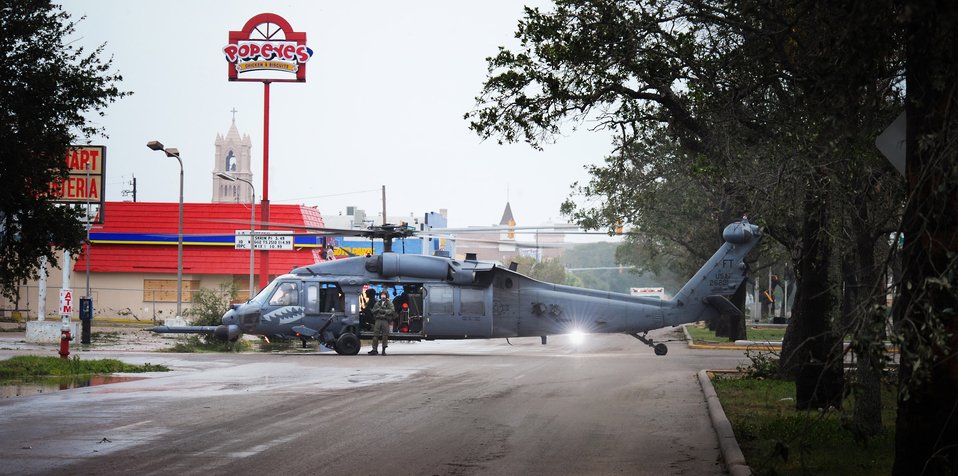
Perfect parking spot

An HH-60 Pave Hawk sits in the street Sept. 13 during operations in Galveston, Texas, after Hurricane Ike. The Pave Hawk is assigned to the 331st Air Expeditionary Group at Randolph Air Force Base, Texas.